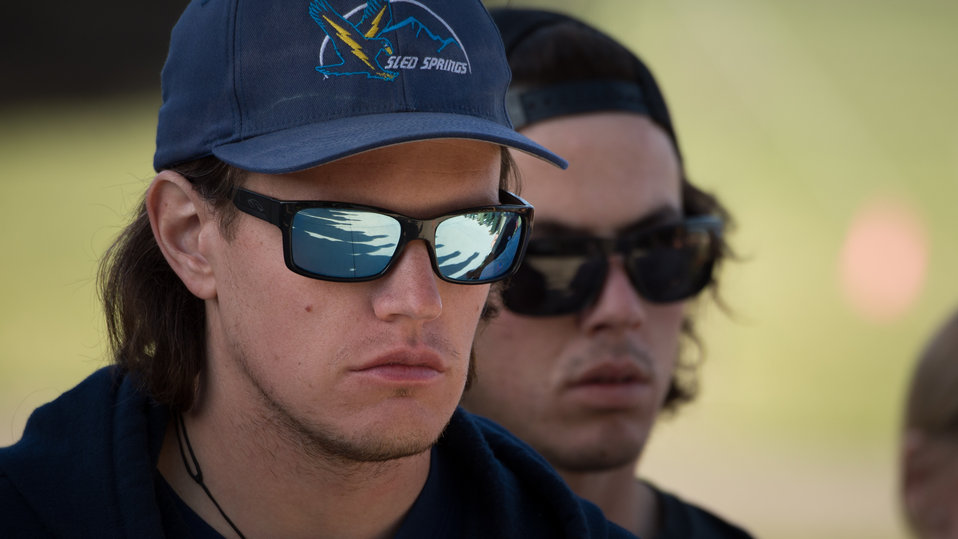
Veteran wildland firefighter rappellers listen closely to the morning safety briefing at the U.S. Department of Agriculture (USDA) U.S. Forest Service (USFS) National Helicopter Rappel Program’s Rappel Academy at Salmon Air Base in Salmon, ID on Wednesday, May 14, 2014. From May 12, 2014, 72 veteran rappellers from all over the nation, 30 support staff, and three helicopters with flight crews attend the training at Salmon Air Base. Participants will rappel into the Perreau Creek area. The annual training is delivered in accordance with the National Rappel Operations Guide; strengthen leadership, teamwork, and communications within the rappel community, and produces quality aerial delivered firefighters for use in fire and aviation operations. The USDA Forest Service National Helicopter Rappel Program’s primary mission is initial attack. Rappel crews may be utilized for large fire support, all hazard incident operations, and resource management objectives.